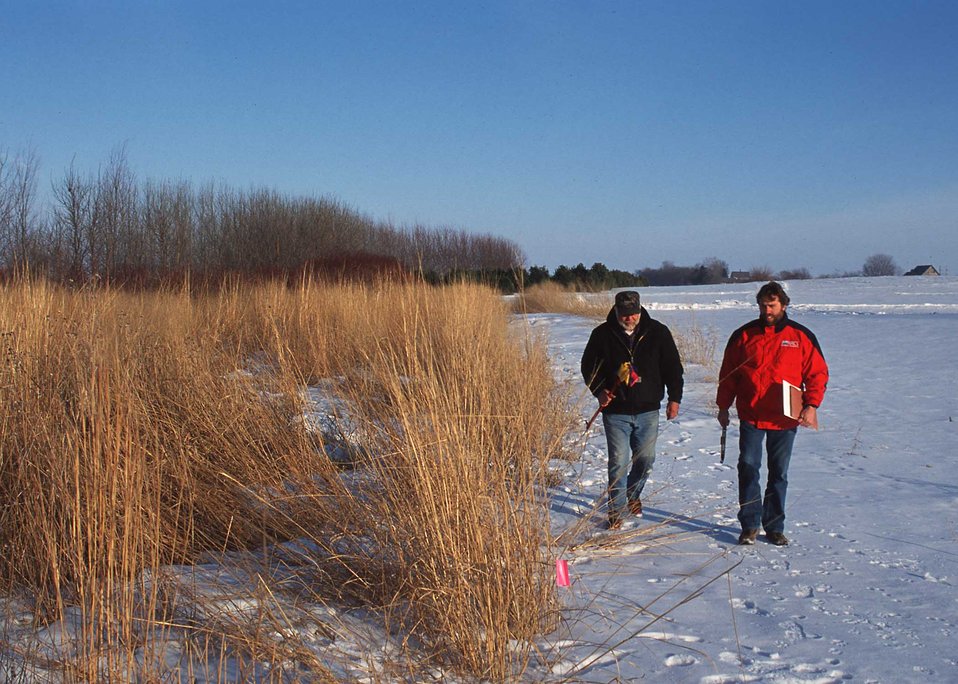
Native grasses are part of a buffer system along Bear Creek in Story County in central Iowa. They aid wildlife and the environment.